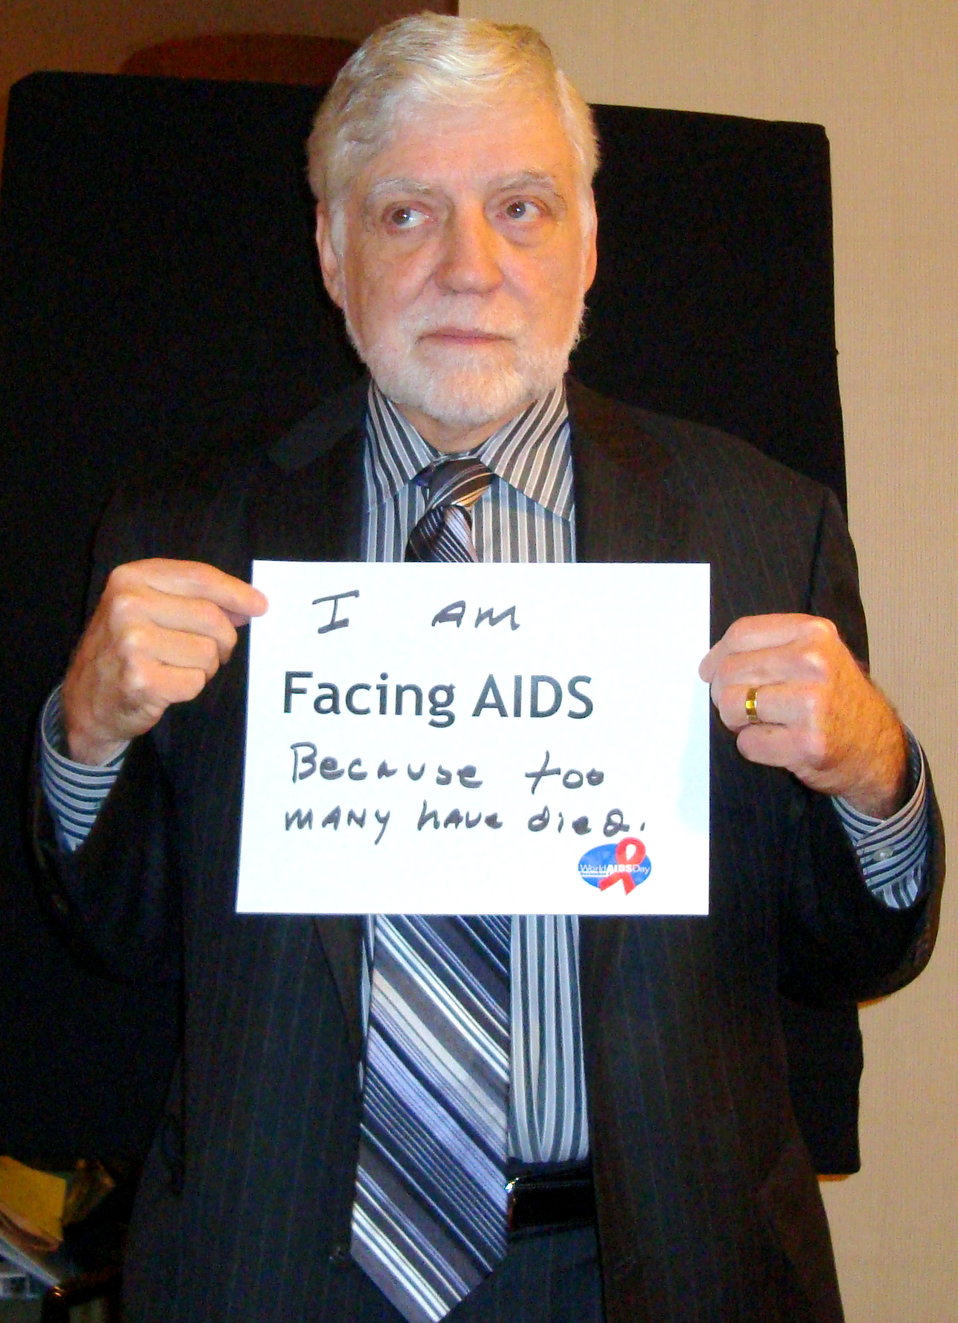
FacingAIDSCampaign 008